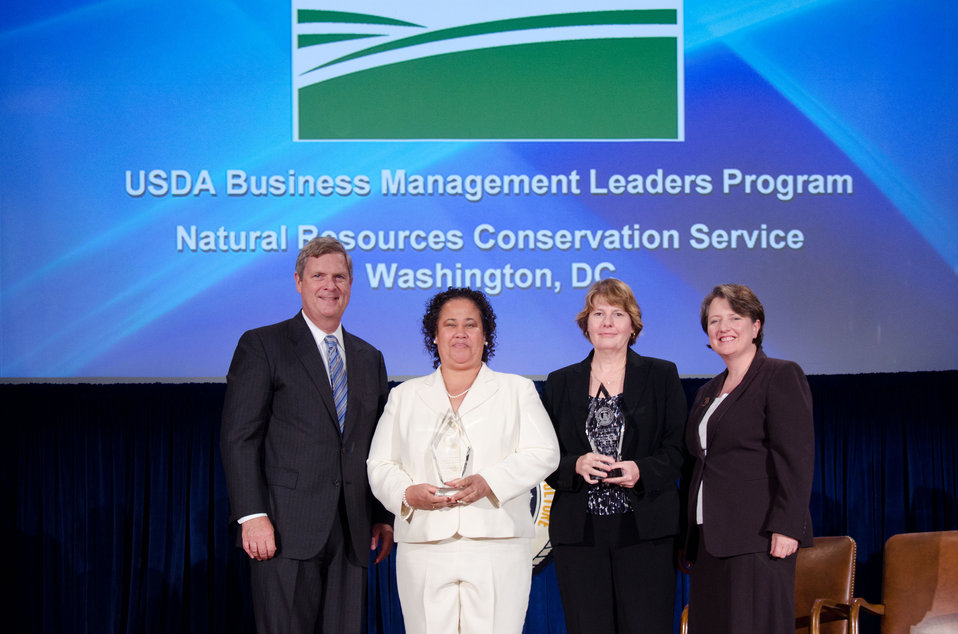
Agriculture Secretary Tom Vilsack (l) and Deputy Secretary Kathleen Merrigan (r), presents the Management Excellence – A Modern Workplace with a Modern Workforce Award to USDA Business Management Leaders Program, Natural Resources Conservation Service, Washington, DC. Sandra Detter and Eloris D. Spreight, Group Leaders. For Leading the developments and implementation of the USDA Business Management Leaders Program with 101 new administrative leaders enrolled in a two year comprehensive cross development program. On Wednesday, September 14, 2011 in the Jefferson Auditorium at the US Department of Agriculture in Washington, DC.